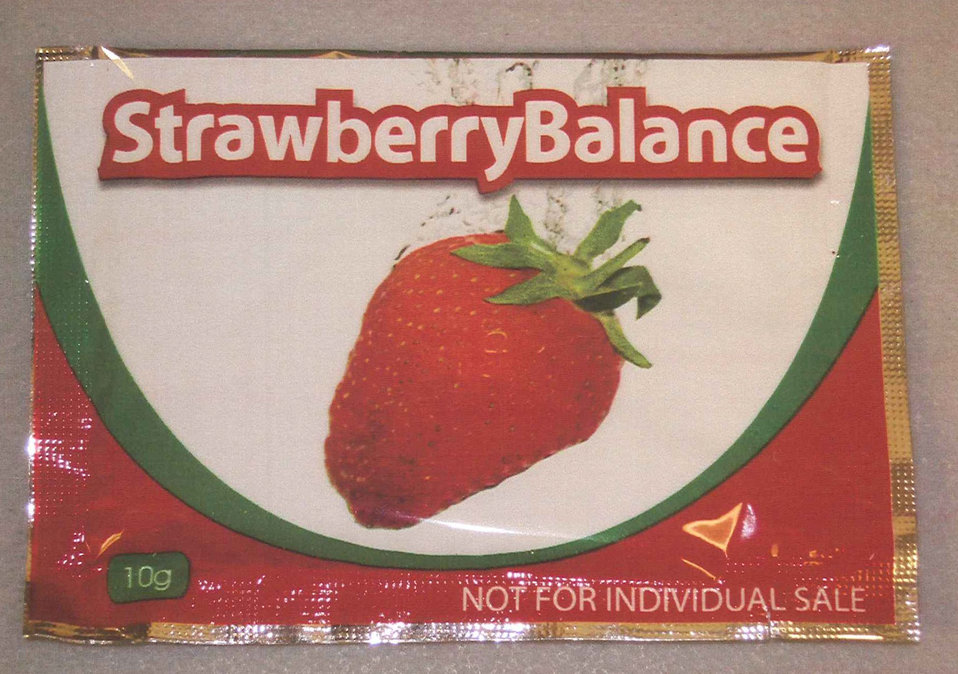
Strawberry Balance

June 27, 2013 - The FDA is advising consumers not to purchase or use 'Strawberry Balance,' a product promoted and sold for weight loss. The product was found to contain undeclared sibutramine. For more information, go to www.fda.gov/Drugs/ResourcesForYou/Consumers/BuyingUsingMe...

And read this Consumer Update: Beware of Fraudulent ‘Dietary Supplements’